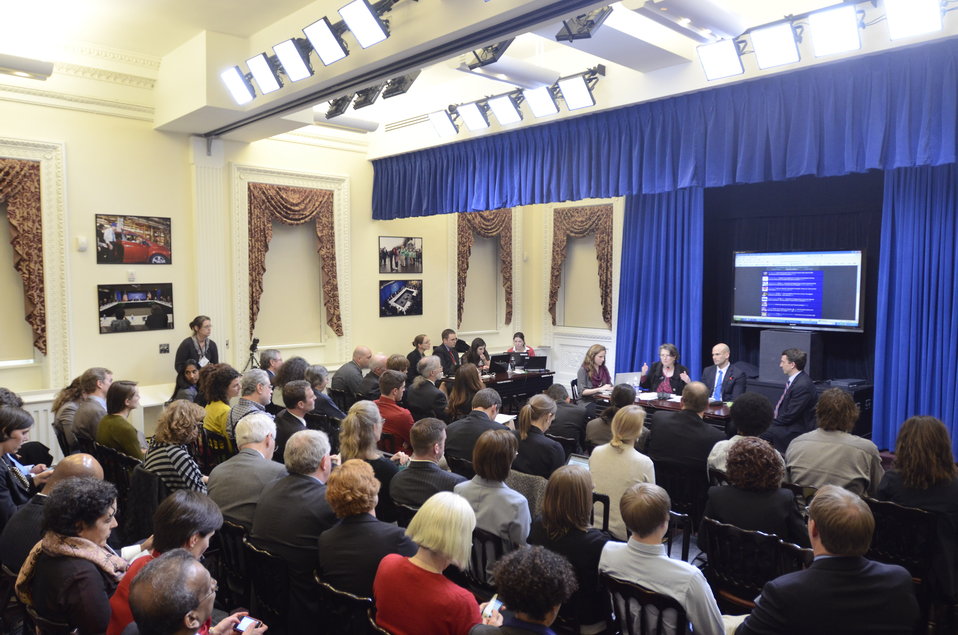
Agriculture Deputy Secretary Kathleen Merrigan (behind table on left), White House Personal Chef and Food Policy Advisor Sam Kass (at table w/blue tie) and White House Office of Public Engagement Director Jon Carson (at table, right), a Know Your Farmer Compass event that utilized twitter social media to continue the National Conversation on Local and Regional Food projects and how they offer economic opportunities to local farmers, ranchers and food entrepreneurs. using the new web -based Know Your Food Compass, the conversation covered many aspects about food, such as infrastructure, stewardship, local meat and poultry, Healthy food access, careers in agriculture and local food knowledge. The virtual conversation took place at the White House, and Twitter was used to expand the conversation worldwide, from Washington, D.C., on Monday, March 5, 2012. Unlike most events where mobile communication devices are asked to be turned off, here it was asked that they remain on allowing people to have social media conversations.